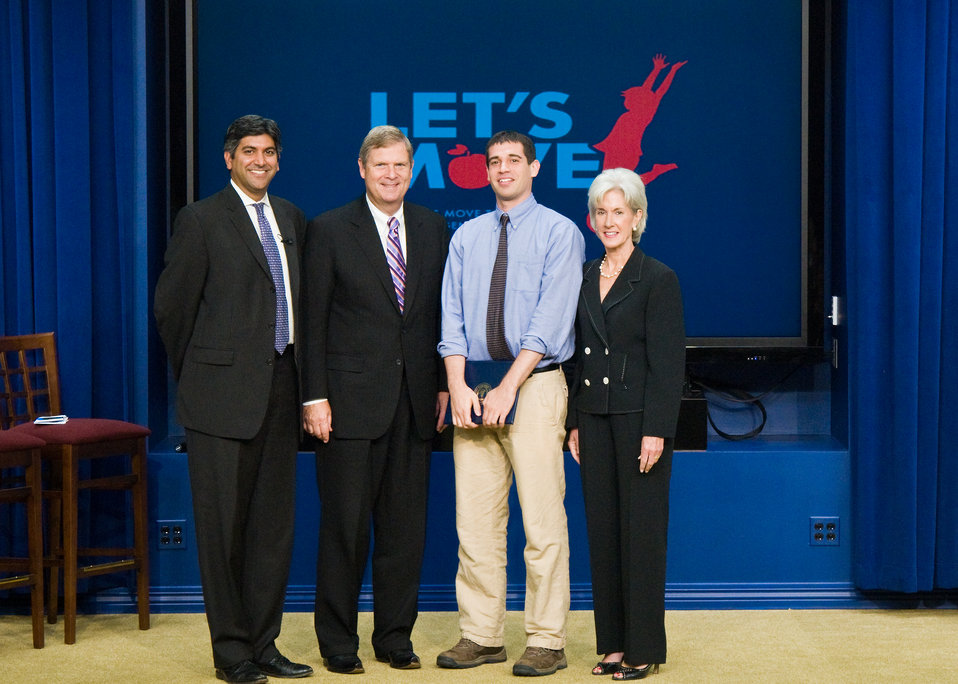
Aneesh Chopra, White House Chief Technology Officer, Health and Human Services Secretary Kathleen Sebelius and Agriculture Secretary Tom Vilsack present the Corporate Recognition Award to Ben Reis, Brookline, Massachusetts, Team Leader of the developers of 'Food Hero,' of The Apps for Healthy Kids competition at the White House, in Washington, DC, on Wednesday, September 29, 2010. The Apps for Healthy Kids competition is part of First Lady Michelle Obama’s Let’s Move campaign to end childhood obesity within a generation. The competition challenges software developers, game designers, students and other innovators to develop fun and engaging software tools and games to urge children, especially “tweens” (children ages 9-12) – directly or through their parents – to eat better and be more physically active. 'Food Hero,' is a game that encourages kids to make more nutritious food choices and become more physically active. Eating healthy balanced meals every day helps you build strength. The goal of the game is to become a Food Hero by eating right and completing a set of running, biking and swimming challenges. USDA Photo 10di1506-112 by Bob Nichols.